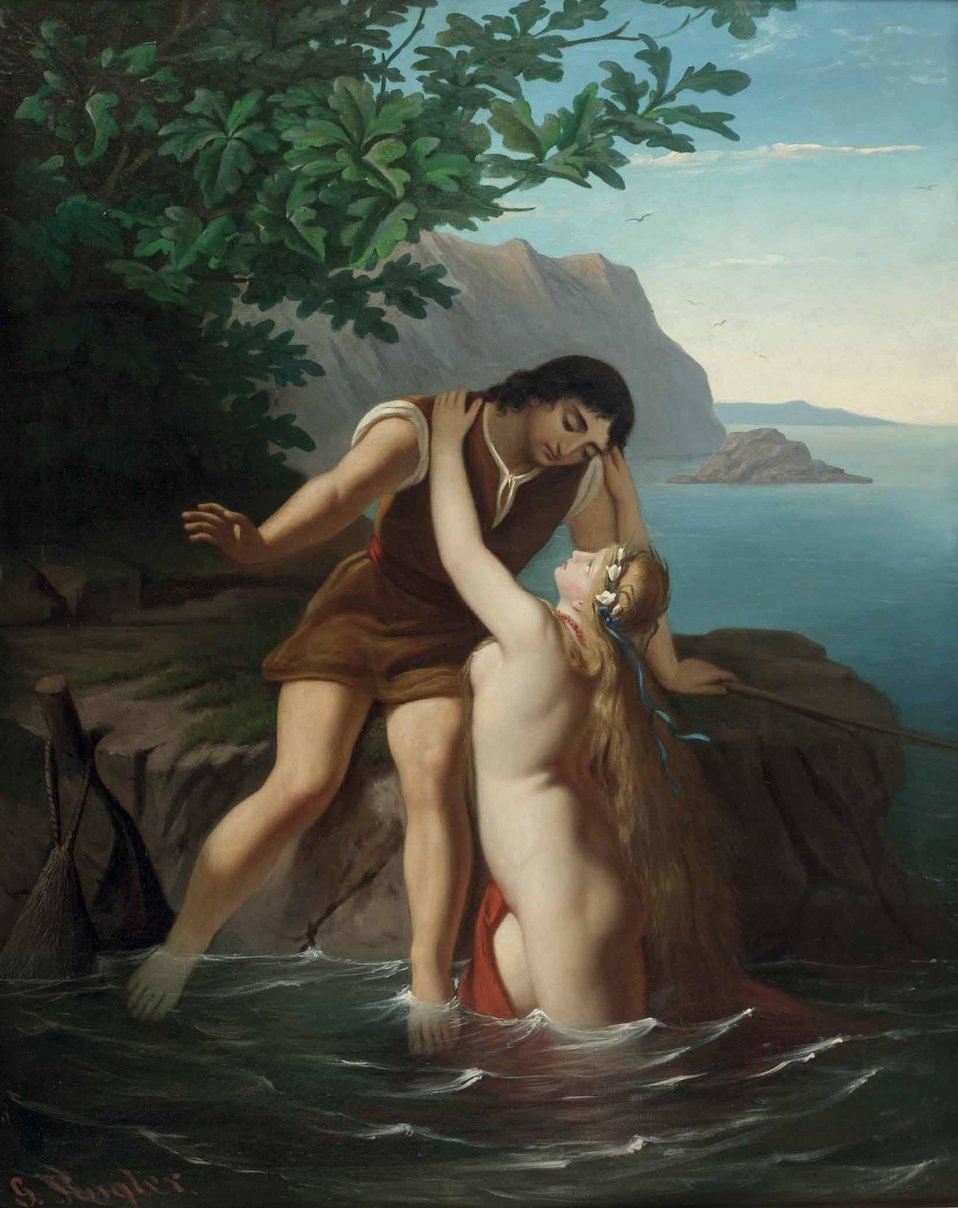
Deutsch: 'Nereide und junger Mann, im Hintergrund Meereslandschaft' Öl auf Leinwand, ca. 120 x 95 cm